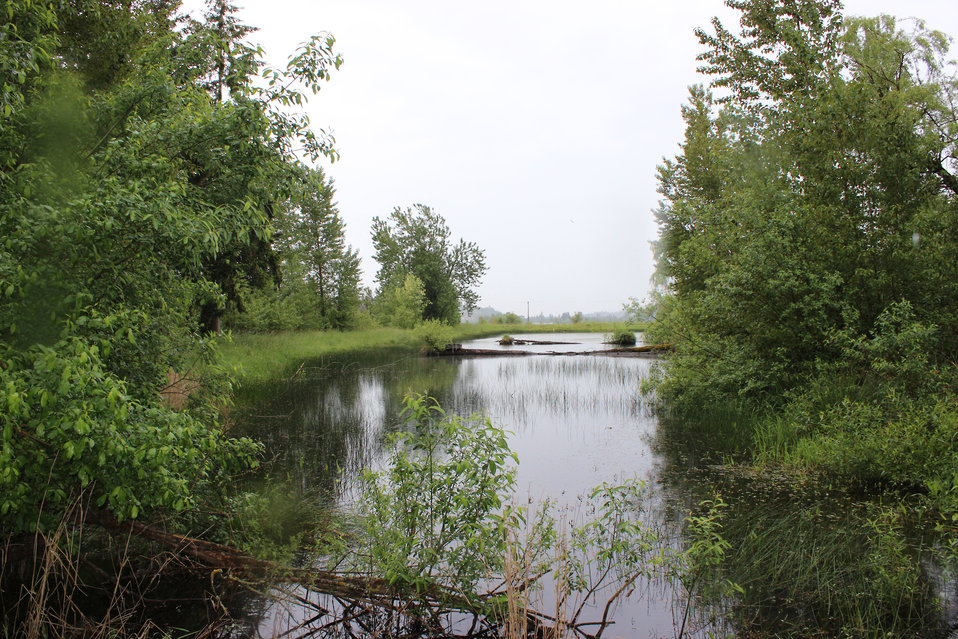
ACEP 1

The new Farm Bill bundles major easement programs into the Agricultural Conservation Easement Program.